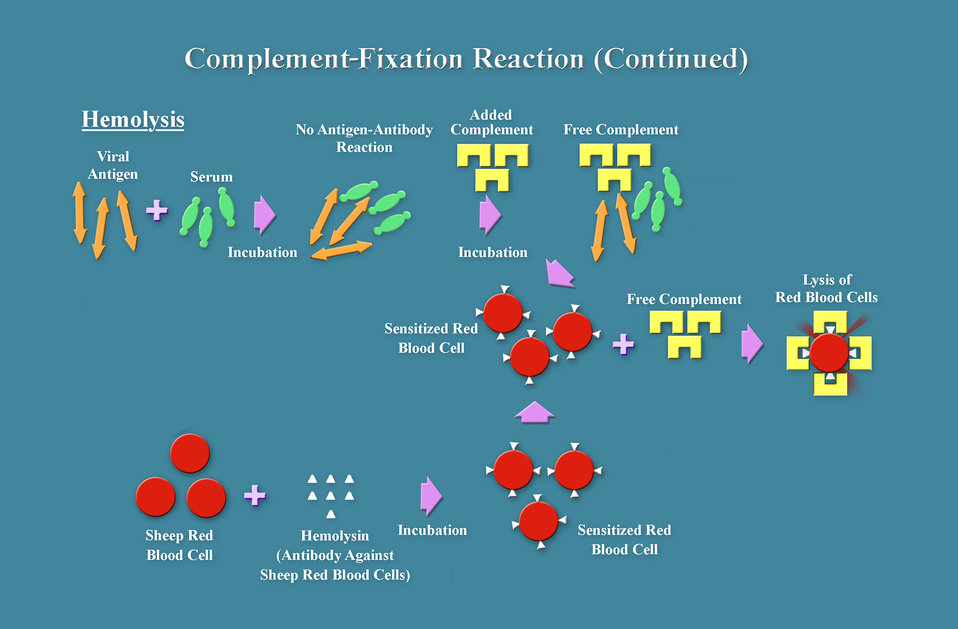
This illustration, and PHIL 14988, depicts what takes place during a complement-fixation test, used to determine the presence of an antigen-antibody complex within a serum sample, and whether or not, with the addition of a complement to the sample, the complement remains free, or in turn, is bound to the antigen-antibody complex.